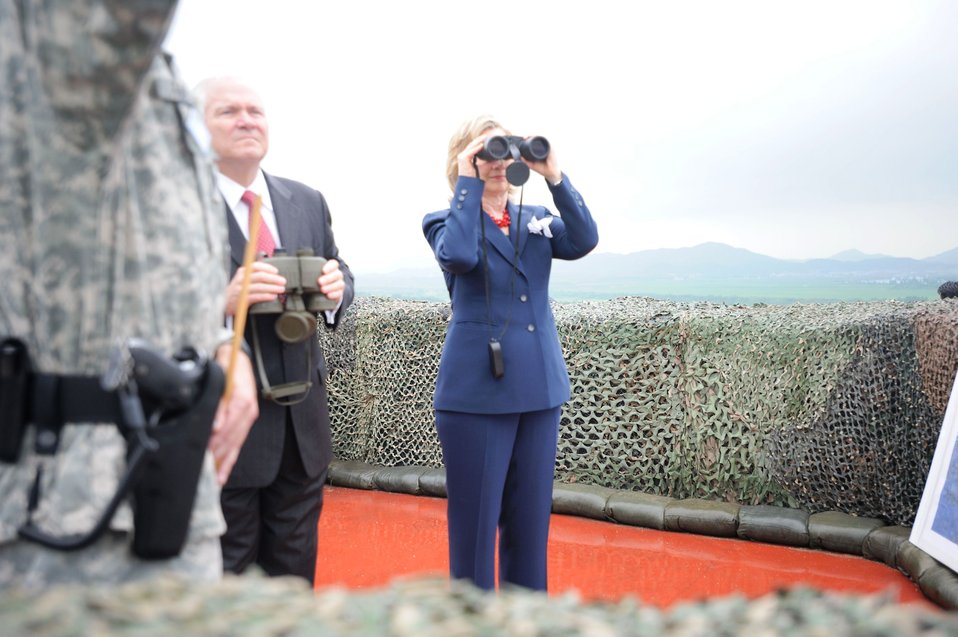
Secretary Clinton Looks Out Over the Military Demarcation Line (MDL)

U.S. Secretary of State Hillary Rodham Clinton looks out over the Military Demarcation Line (MDL) into North Korea, along with U.S. Secretary of Defense Robert M. Gates at Observation Point Ouellette in Panmunjom, South Korea, on July 21, 2010.